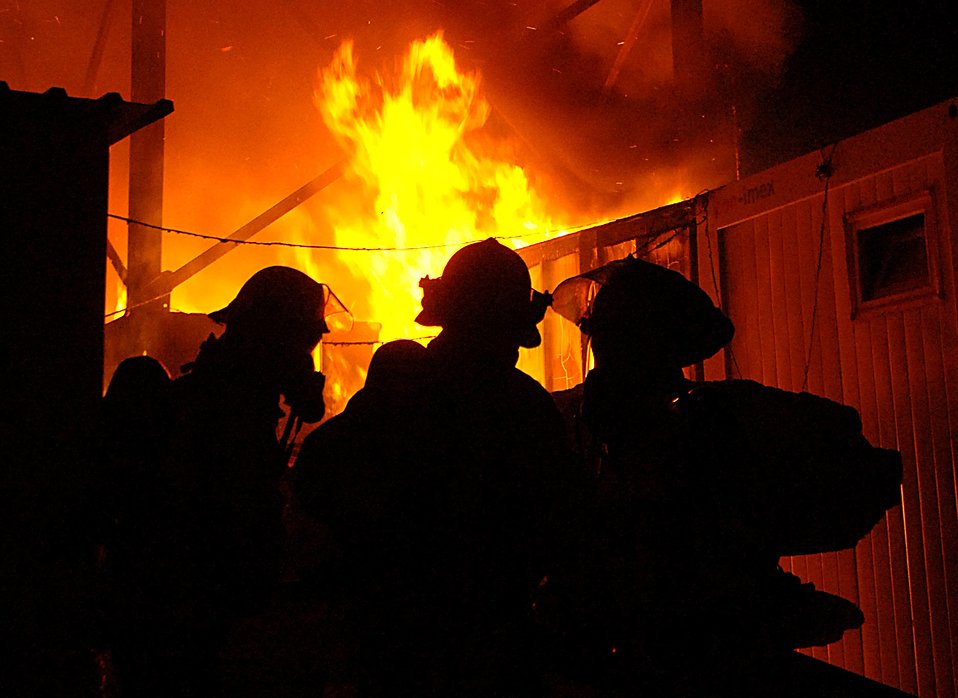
Firefighters battle blaze in Iraq

Firefighters from contractor Wackenhut Fire and Emergency Service battle a fire at Forward Operating Base Marez in Mosul, Iraq, on Thursday, June 8. The fire was at a local restaurant and jewelry store.